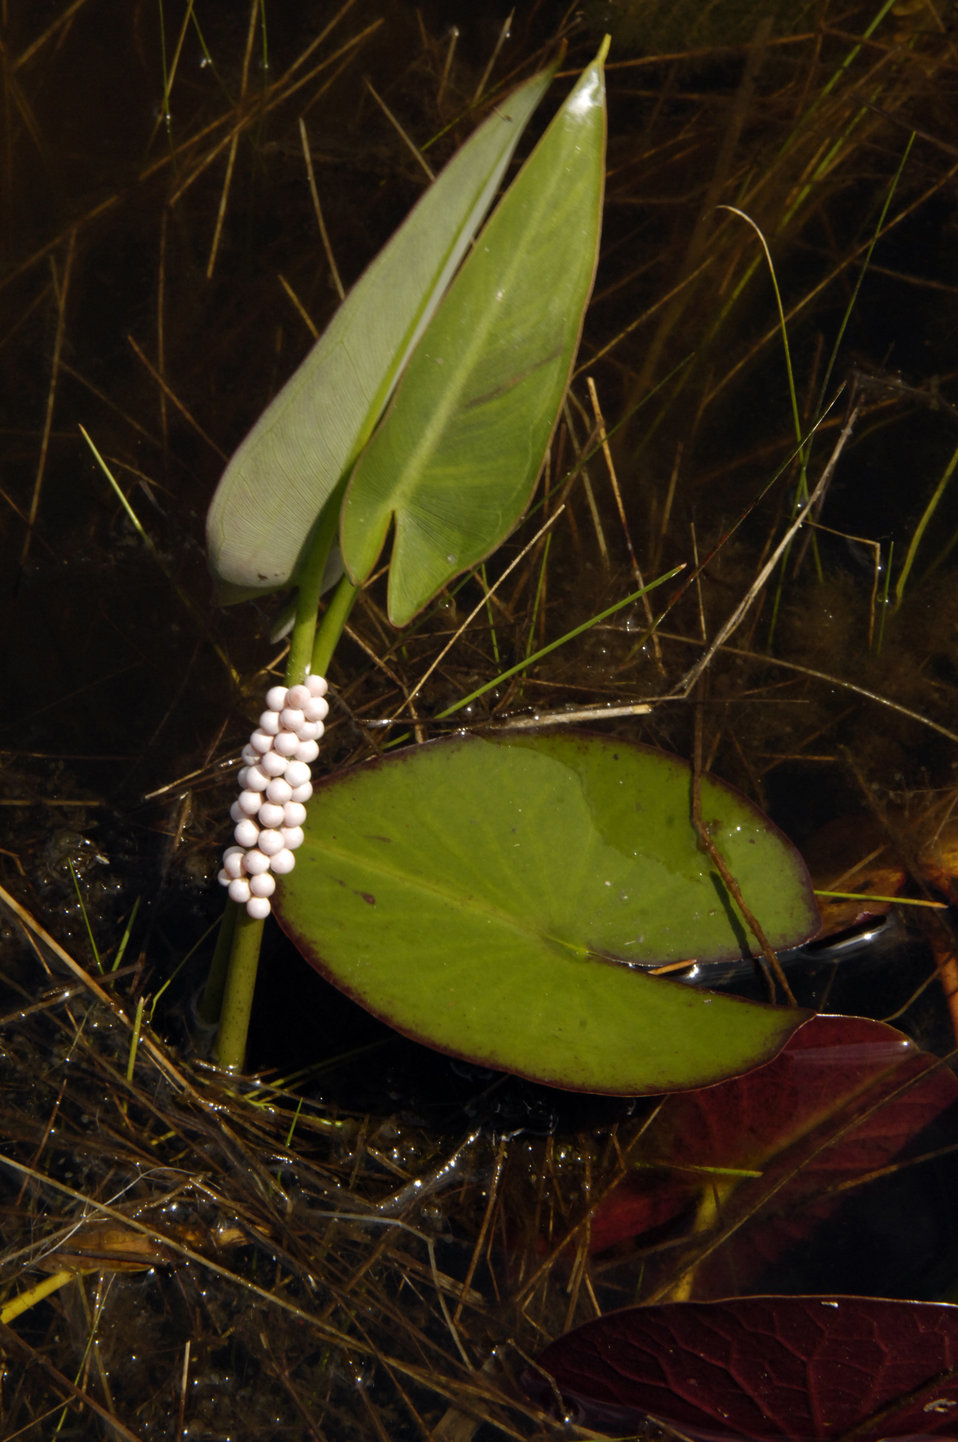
An Apple Snail has laid its pearly white eggs clustered on a plant stem about two feet (60 cm) above the water's surface in Everglades National Park in Florida on April 5, 2010. In approximately three to four weeks the eggs will hatch and the baby snails will crawl down the plant into the water. The apple snail (Pomacea paludusa) is found throughout the fresh-water and detritus of the Everglades. This air-breathing snail feeds on algae and decaying matter found on plants and rocks in the water.